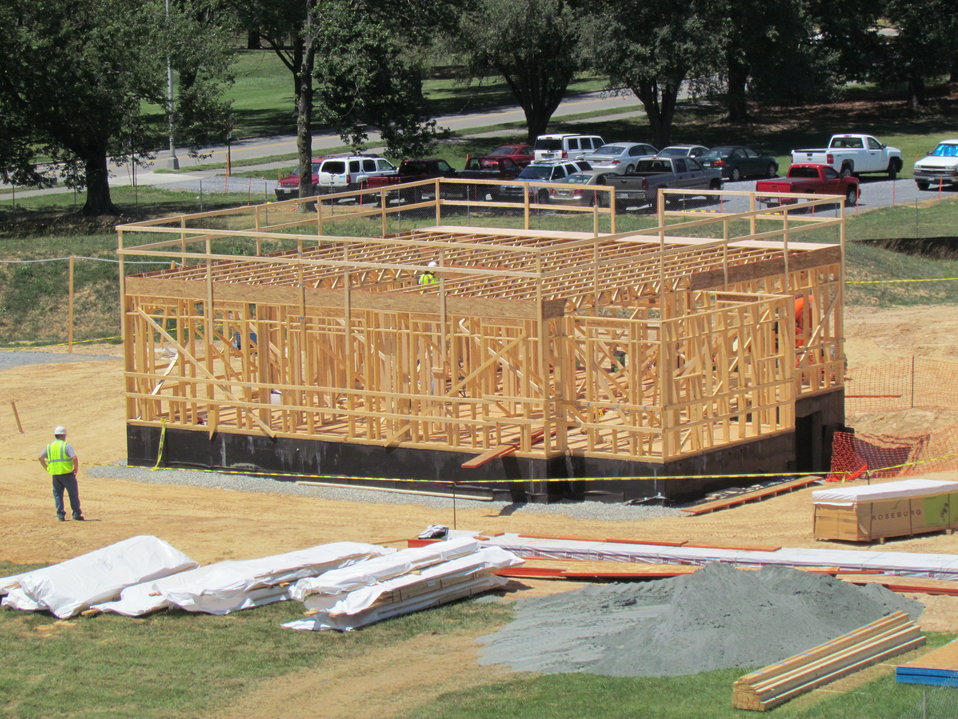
Net-Zero Energy Residential Test Facility - Picture showing completed first floor framing and safety barrier in place to begin construction of second floor framing.